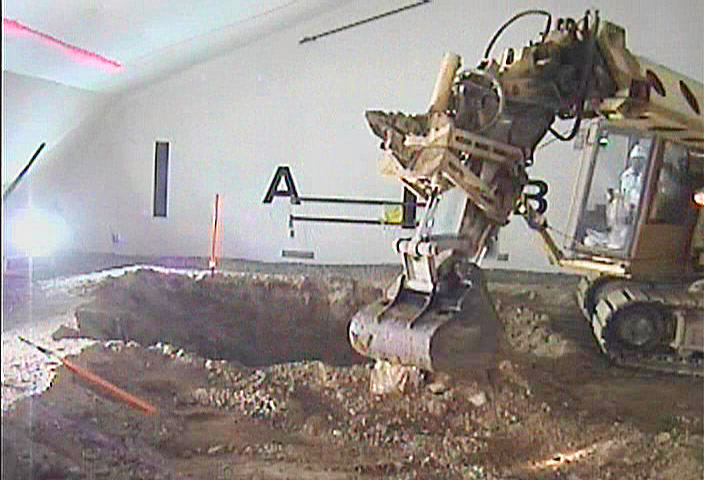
Idaho Site Completes Buried Waste Project a Year Ahead of Schedule

Waste is exhumed in the Accelerated Retrieval Project IV retrieval enclosure recently.

Using $26 million from the Recovery Act, workers at the Idaho site recently finished a buried waste retrieval effort more than a year ahead of schedule.